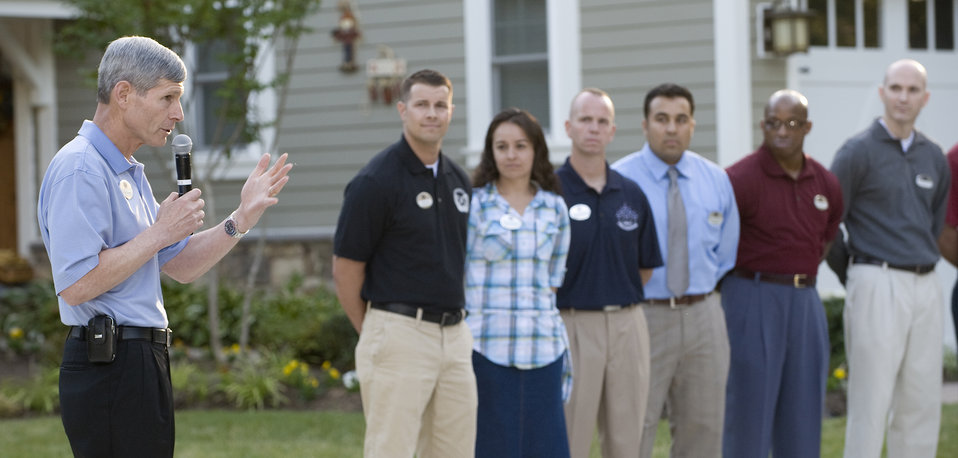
Social starts week celebrating outstanding Airmen

Air Force Chief of Staff Gen. Norton Schwartz (left) congratulates the 12 Outstanding Airmen of the Year, Sept. 11, 2010, at Airey House on Andrews Air Force Base, Md. Chief Master Sgt. of the Air Force James Roy hosted a social in honor of the Airmen. This awards program began in 1956. Each year the program recognizes 12 enlisted Airmen for their superior leadership, job performance, community involvement and personal achievements.